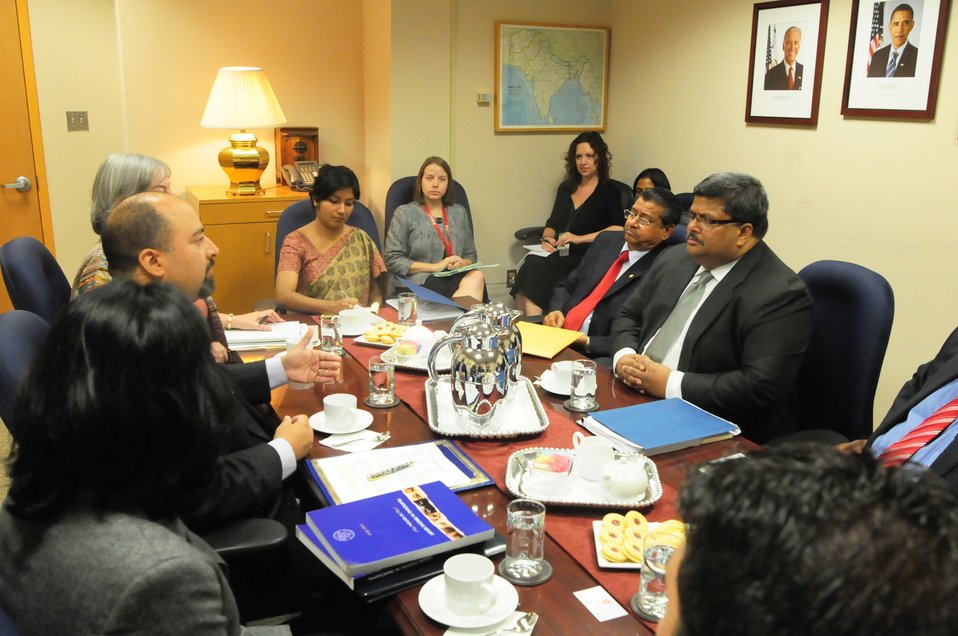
South and Central Asian Affairs Representatives Meet With Bangladeshi Foreign Secretary Mijarul Quayes

Representatives of the U.S. Department of State’s Bureau of South and Central Asian Affairs meet with Bangladeshi Foreign Secretary Mijarul Quayes at the U.S. Department of State in Washington, D.C., on June 29, 2010.